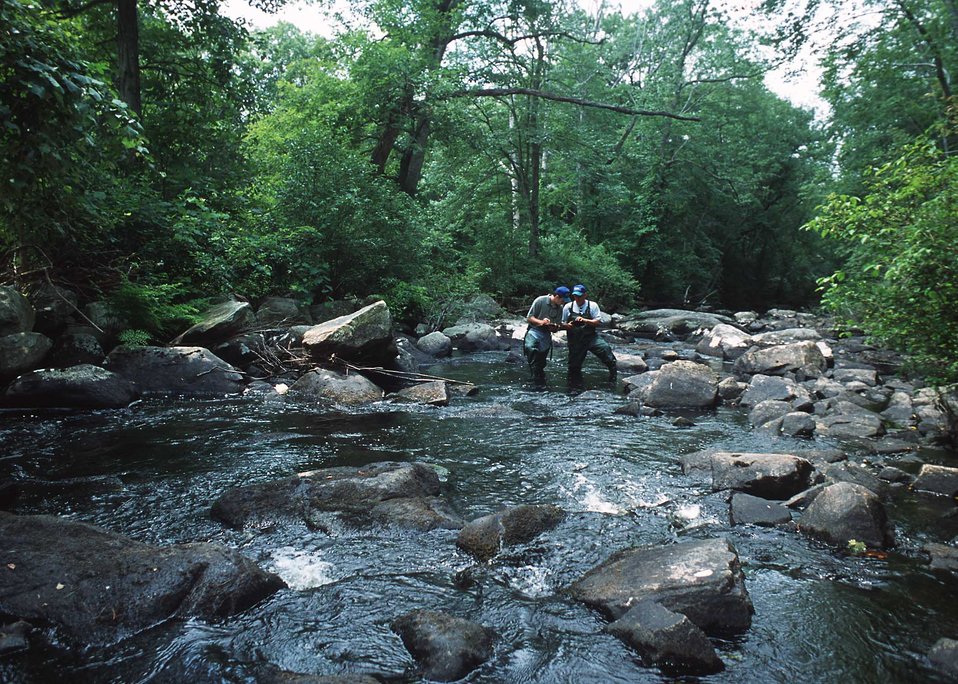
NRCS Conservationist, Todd Bobowick and Alan Page conducting a stream survey of benthic invertebrates in the Eightmile River.